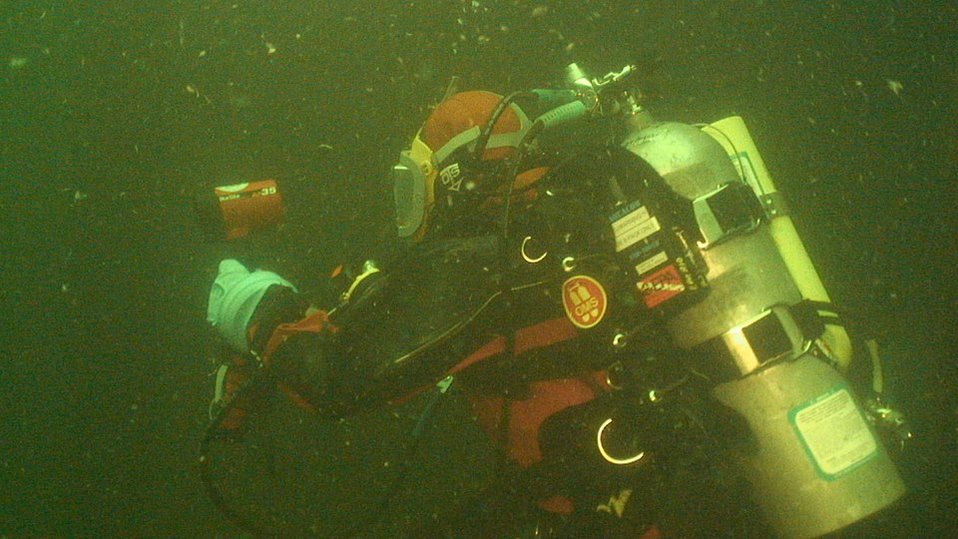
October 24, 2012 Technology vs Conditions

Technology has improved, has water quality?

Backscatter is a common problem for underwater photos. Particularly in murky, sometimes polluted conditions, where EPA divers more often find themselves working.

Documerica, and the photographs of our environment decades ago, inspired some of our divers to reflect on the Read their thoughts on the the Evolution of Underwater Photography

Check out more of their tales and adventures at www.facebook.com/EPAdivers